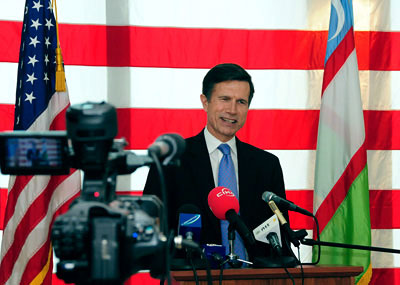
Assistant Secretary Blake Responds to Reporters’ Questions

U.S. Assistant Secretary of State for South and Central Asian Affairs Robert O. Blake responds to reporters’ questions during his visit to Tashkent, Uzbekistan, for the second round of its Annual Bilateral Consultations with Uzbekistan on February 18, 2011.